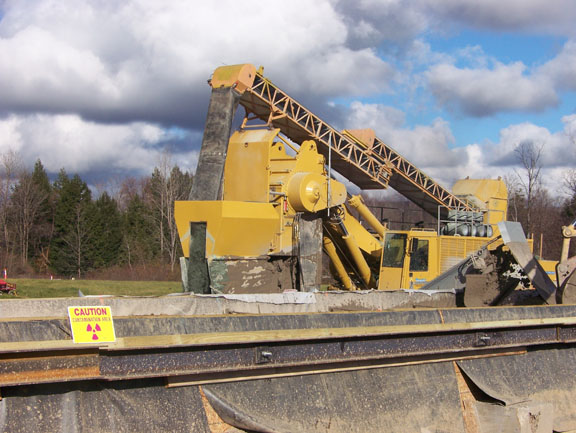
Recovery Act Workers Reach Milepost in West Valley

The powerful, 200,000-pound trencher arrived at West Valley Demonstration Project in parts that filled seven trucks. The trencher excavated soil and replaced it with zeolite, a naturally occurring mineral formed from volcanic ash that strips contamination from the groundwater.

In December 2010, an American Recovery and Reinvestment Act crew completed construction of a long trench to curb contaminated groundwater at the West Valley Demonstration Project.